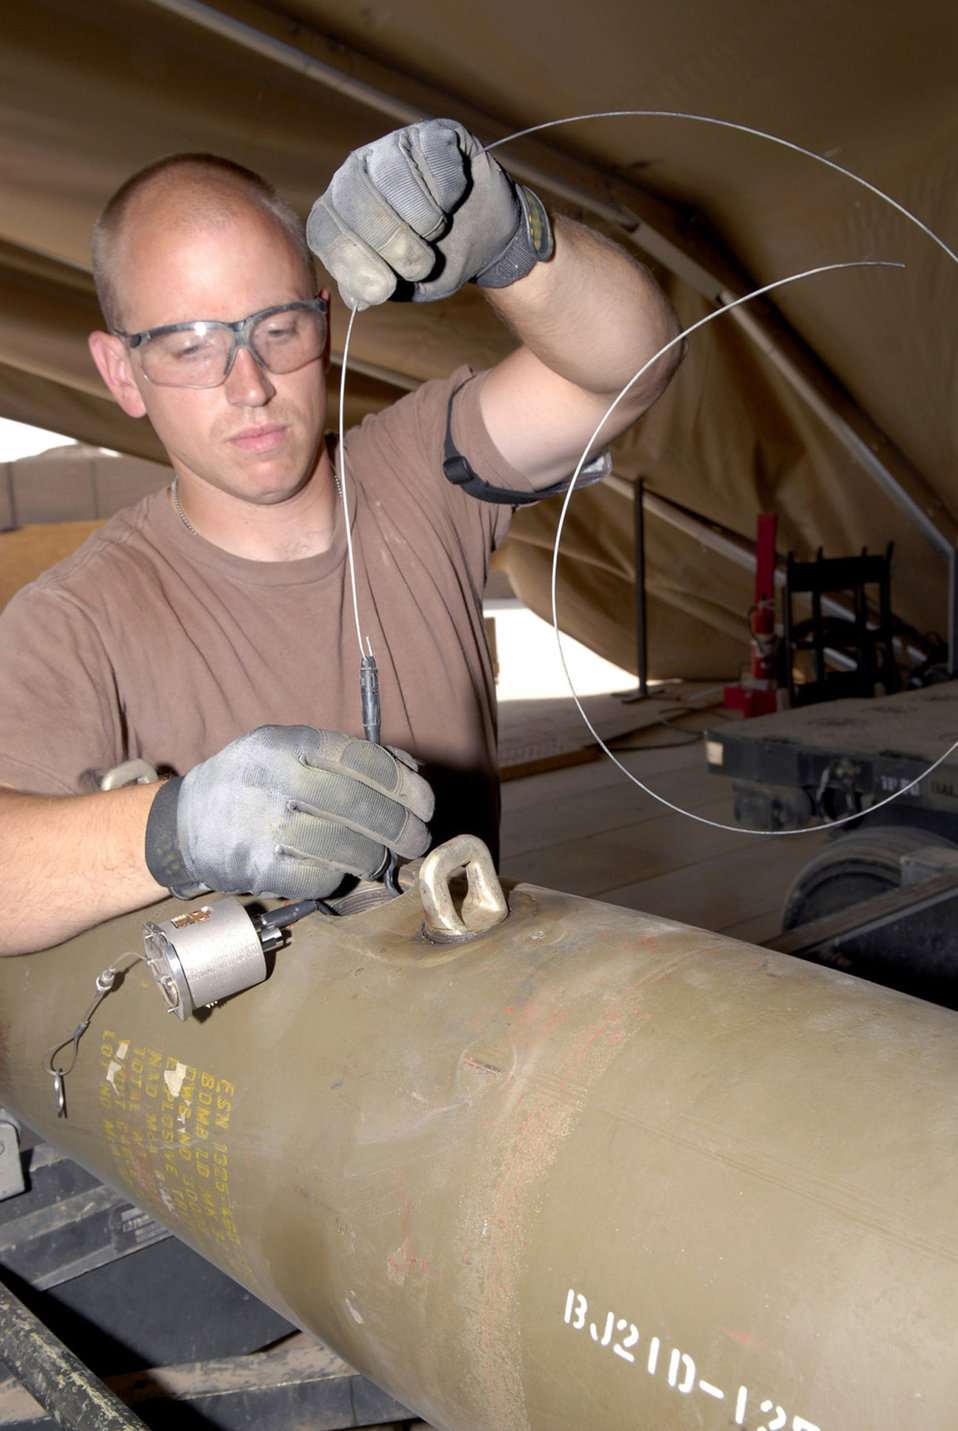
Bombs away

Staff Sgt. Travis Tarr works on a joint direct attack munition Oct. 15 at Balad Air Base, Iraq. The guided bomb unit-38 JDAM is used with the F-16 Fighting Falcon and is designed to explode above ground. Sergeant Tarr is deployed from Spangdahlem Air Base, Germany. He is assigned to the 332nd Expeditionary Maintenance Squadron.